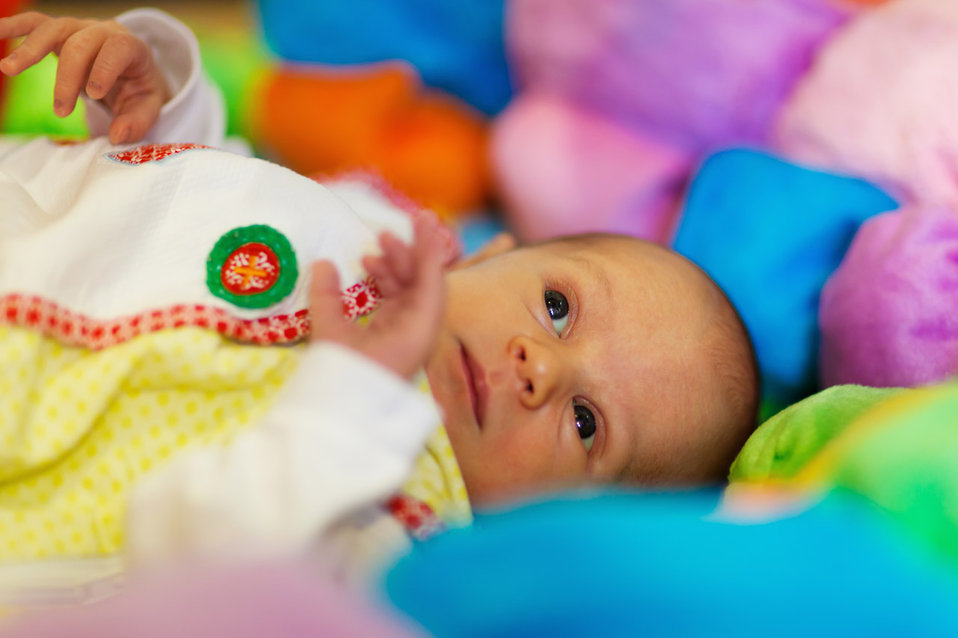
Baby looking

Tiny baby is looking at something surrounded with colorful toys.